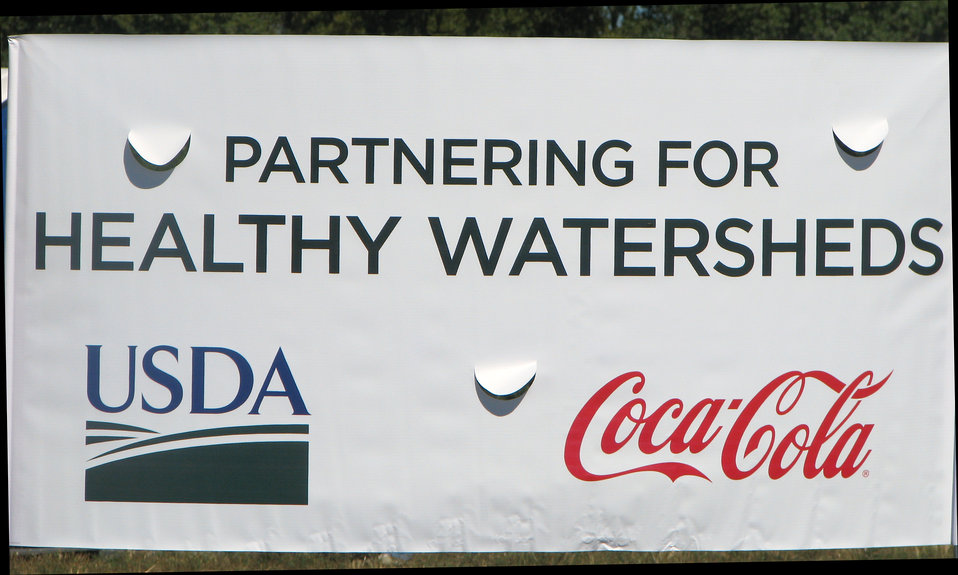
Agriculture Secretary Tom Vilsack and Coca-Cola Americas President Steve Cahillane announce a public-private partnership to restore and protect damaged watersheds on national lands at the Midewin Tallgrass Prairie in Illinois on Friday, Sep. 13, 2013. The goal of this partnership is to return more than a billion liters of water to the National Forest System that provides drinking water to more than 60 million Americans.